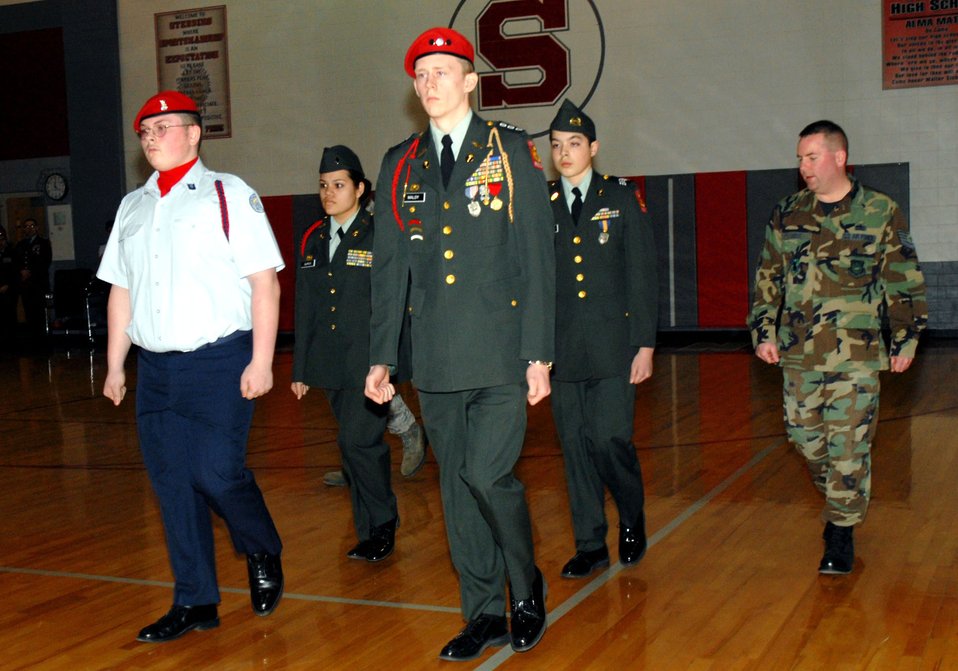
Airmen judge Junior ROTC drill competition

Tech. Sgt. Billie E. Hodge watches for any incorrect drill movements during the unarmed knockout competition at a junior ROTC drill team championships held March 29 at Walter E. Stebbins High School in Riverside, Ohio. Sergeant Hodge is the president of the National Air and Space Intelligence Center's Top IV Association from Wright-Patterson Air Force Base, Ohio.